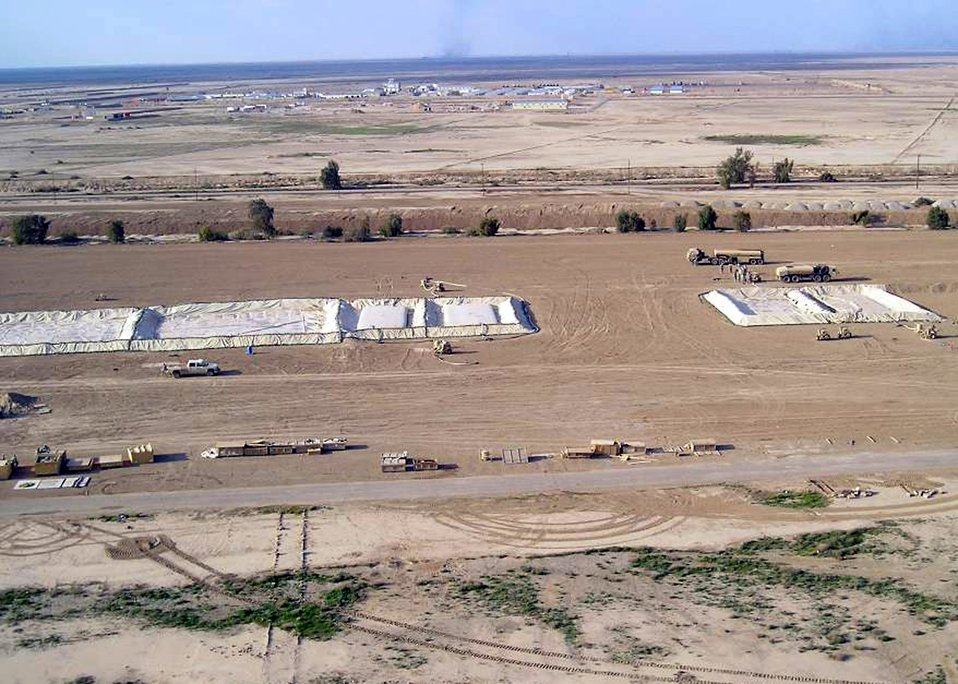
RED HORSE helps build combat brigade base in 45 days

Soldiers of the 13th Sustainment Command completed installing large bladders for Forward Operating Base Hammer's 850,000-gallon-capacity fuel farm in Iraq. 557th Expeditionary RED HORSE Airmen and Soldiers from the 92nd Engineer Battalion's